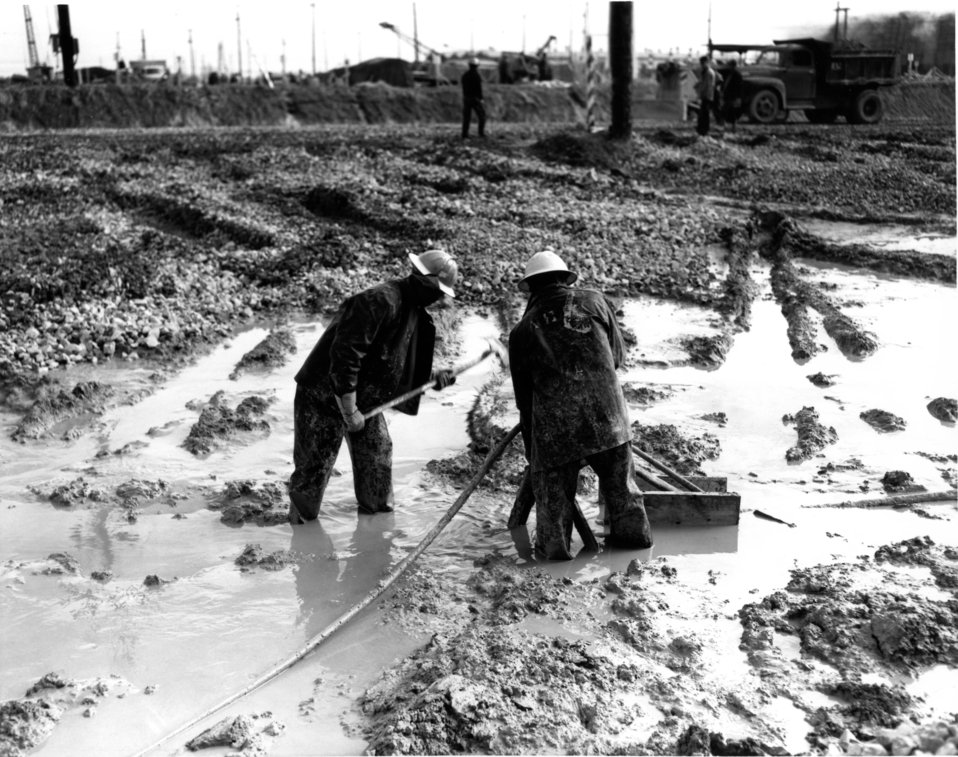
Recreation at Oak Ridge